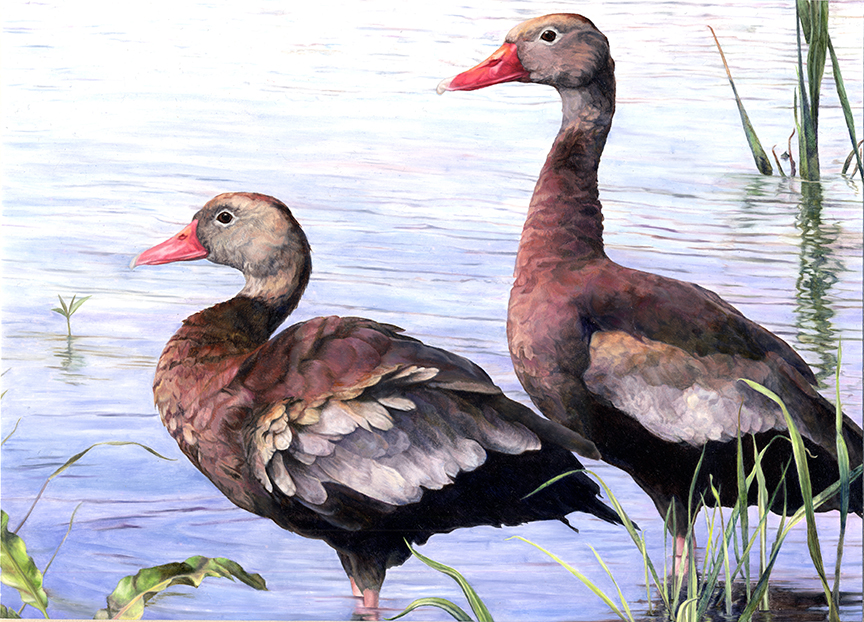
JRDuck2013TX

2013 Junior Duck Stamp Best of Show-Texas